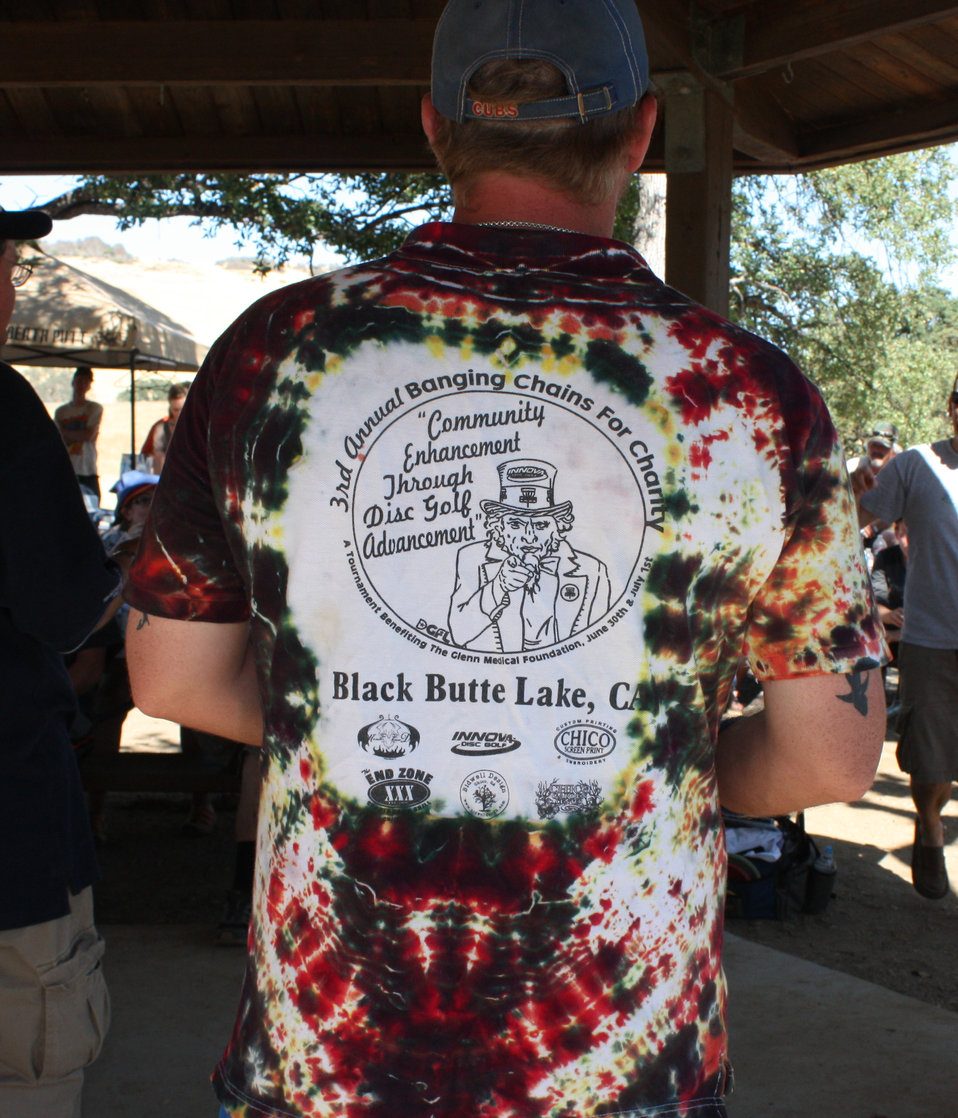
Corps' Black Butte Lake hosts disc-golf charity event

A participant shows off this year's charity event shirt after his round of disc golf at the Corps' Black Butte Lake July 1, 2012. More than $4,000 dollars was raised for the Glenn Medical Foundation this past weekend as 77 disc golfers from throughout California traveled to Black Butte Lake for the third annual Banging Chains for Charity disc golf tournament. (U.S. Army photo Mary Ann Deeming/Released)